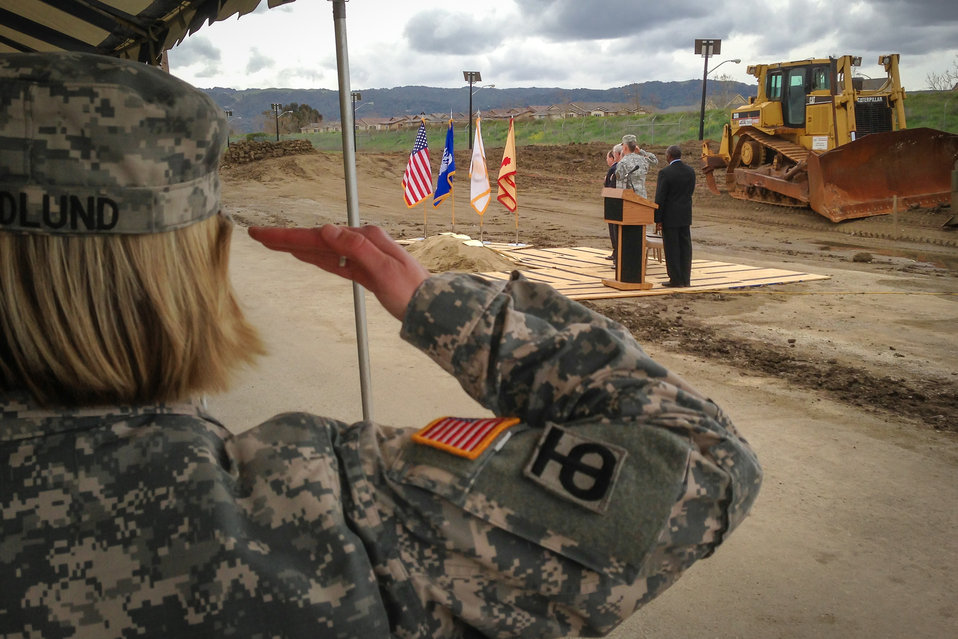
Chaplain (Capt.) Kerstin Hedlund salutes the flag during a groundbreaking ceremony March 6, 2013, at the U.S. Army Garrison Camp Parks Reserve Training center in Dublin, Calif.
The U.S. Army Corps of Engineers Sacramento District's real estate office is overseeing a 180-acre transfer of land in exchange for an estimated $66 million in modern facilities for Camp Parks over the next several years—the largest Army Reserve real property exchange agreement in Department of Defense history.